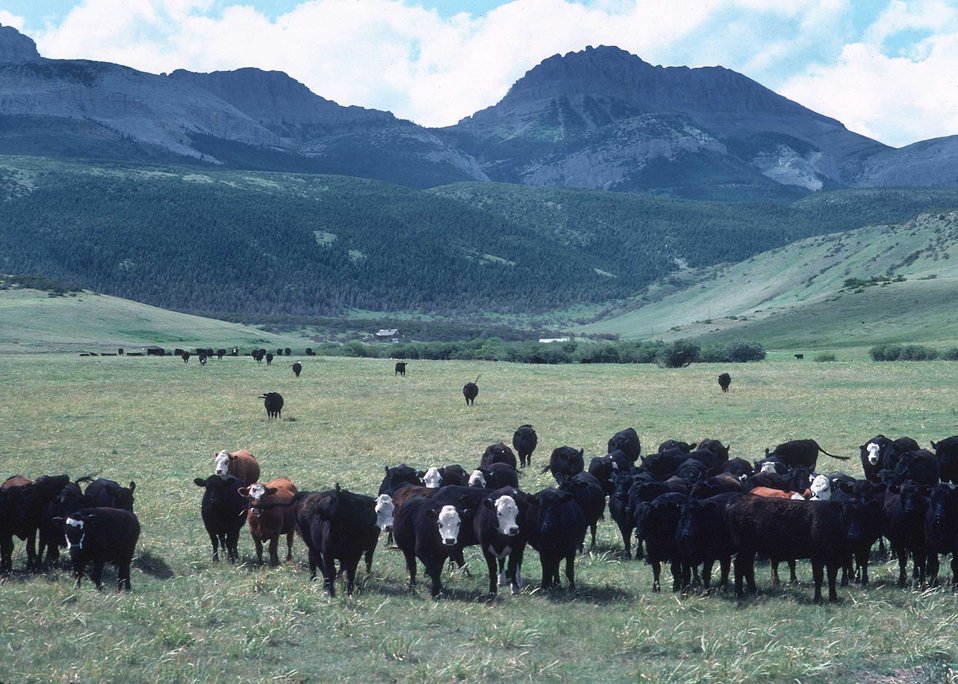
Heifers on rangeland.